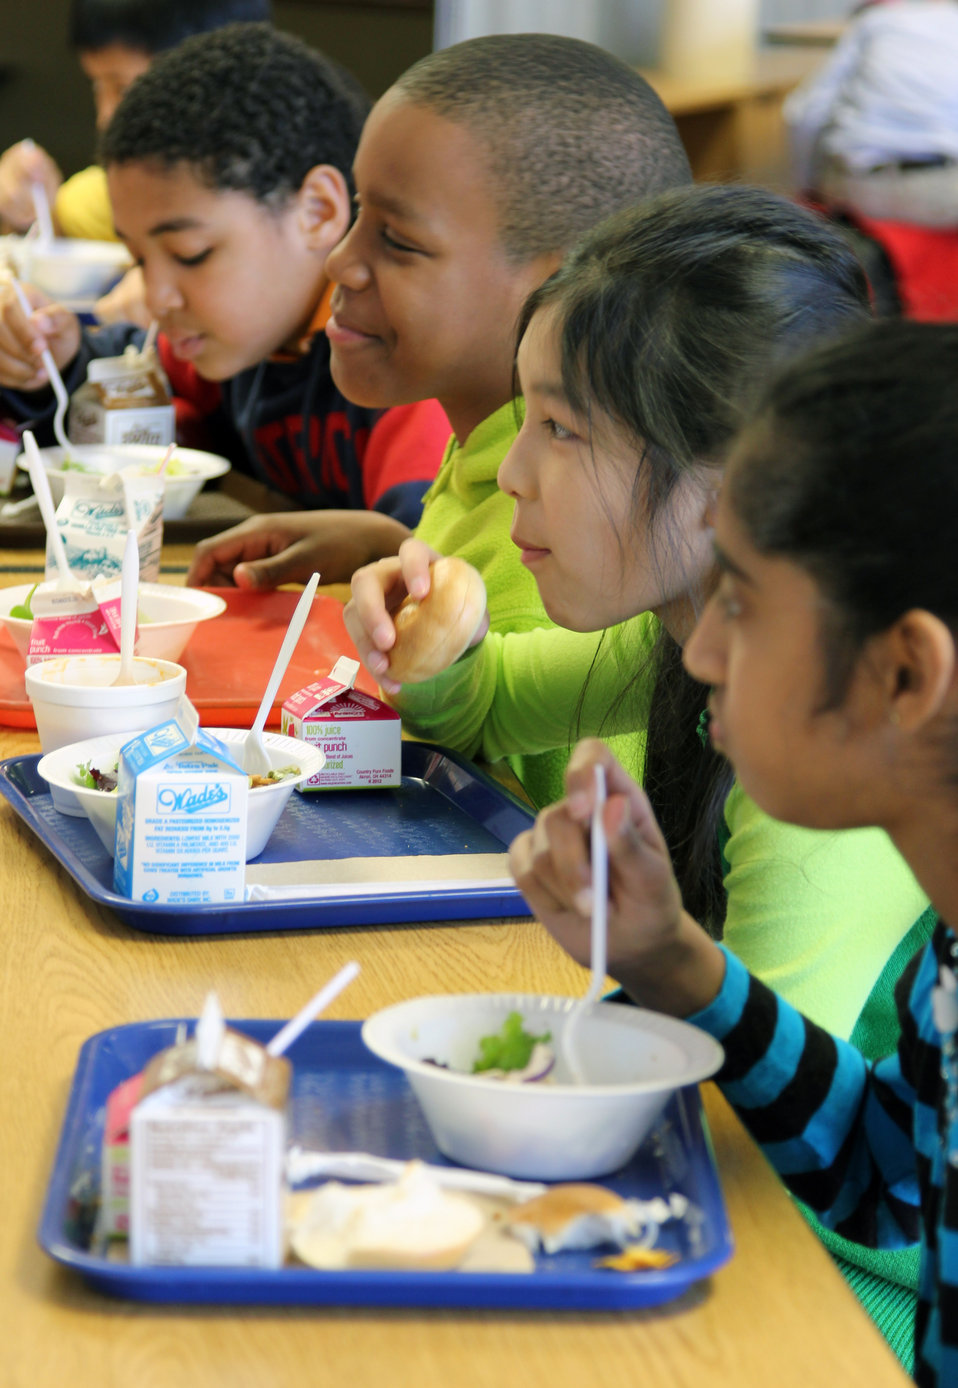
Students at the Wolcott Elementary School in West Hartford, Connecticut enjoying lunchtime during Agriculture Secretary Tom Vilsack’s visit to outline the U.S. Department of Agriculture (USDA) efforts to raise a healthier generation of Americans - April 5, 2013.